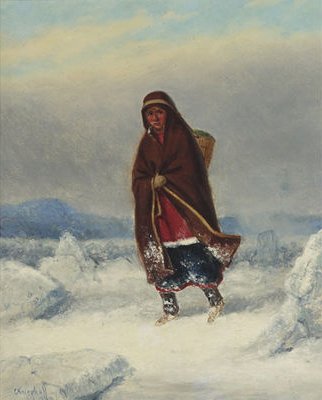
Indian Woman in a Winter Landscape, oil paintings by Cornelius Krieghoff, 11 x 9 in.